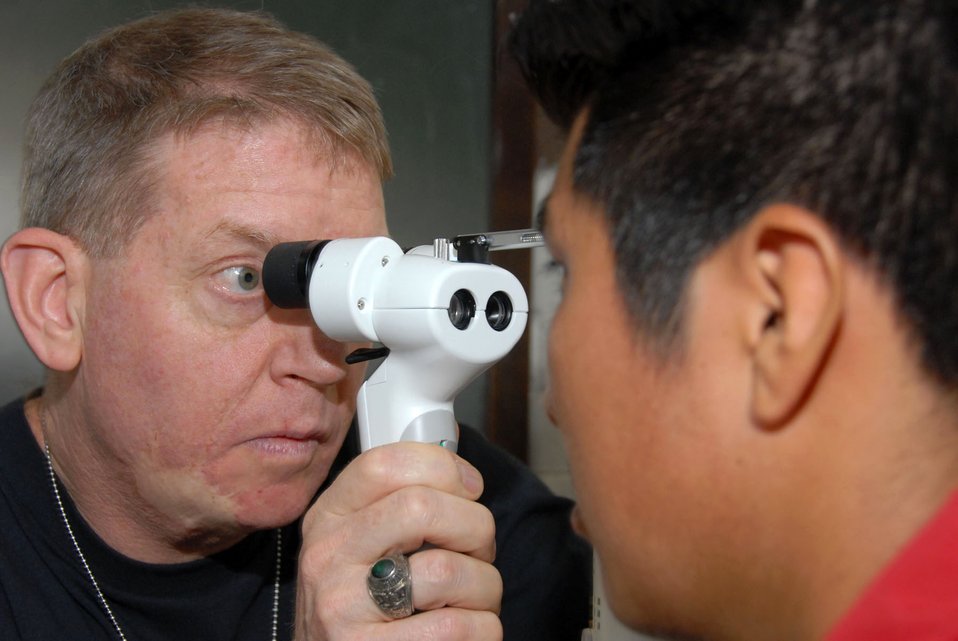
Reservists take medical care to Guatemalans

Lt. Col. (Dr.) Clifton Poling examines the front of the eye of a Guatemalan with a hand held slit lamp during the New Horizons Medical Readiness Training Exercise conducted April 14 through 28 in the region of San Marcos, Guatemala. More than 750 pairs of presription eyeglasses were given during the exercise. Colonel Poling is an optometrist with the 445th Aerospace Medicine Squadron, Wright Patterson Air Force Base, Ohio.